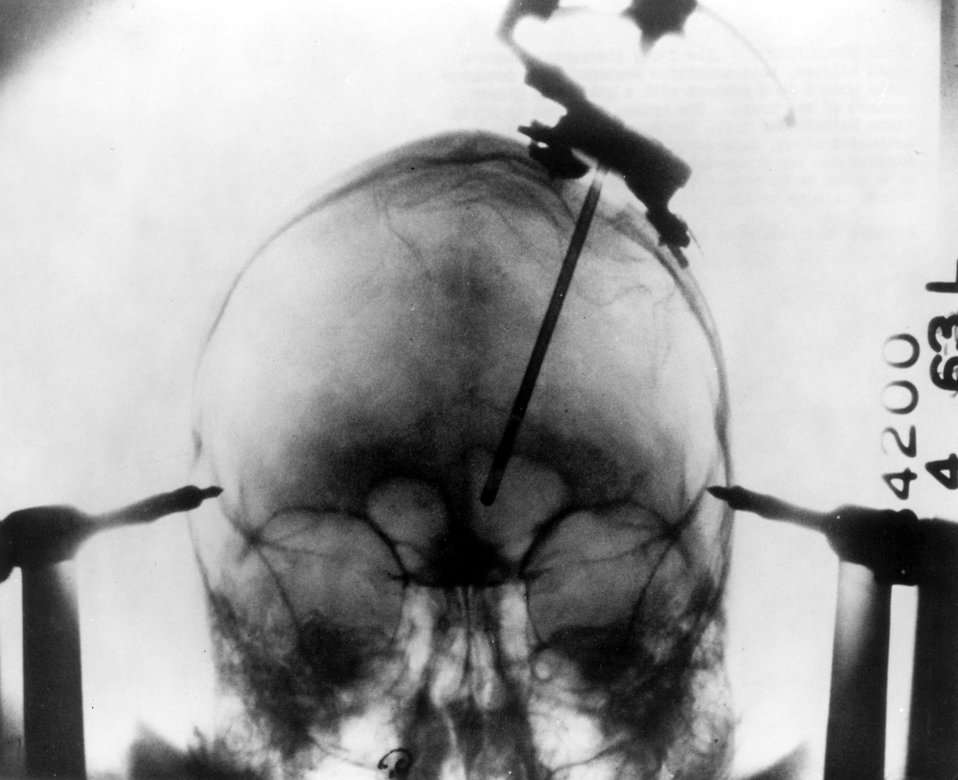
Brain Tumor Probe...The X-ray photograph shows a rigid silicon, beta-sensitive semiconductor detector probe placed in a patient with a malignant glioma (tumor) of the brain. Circa 1970.